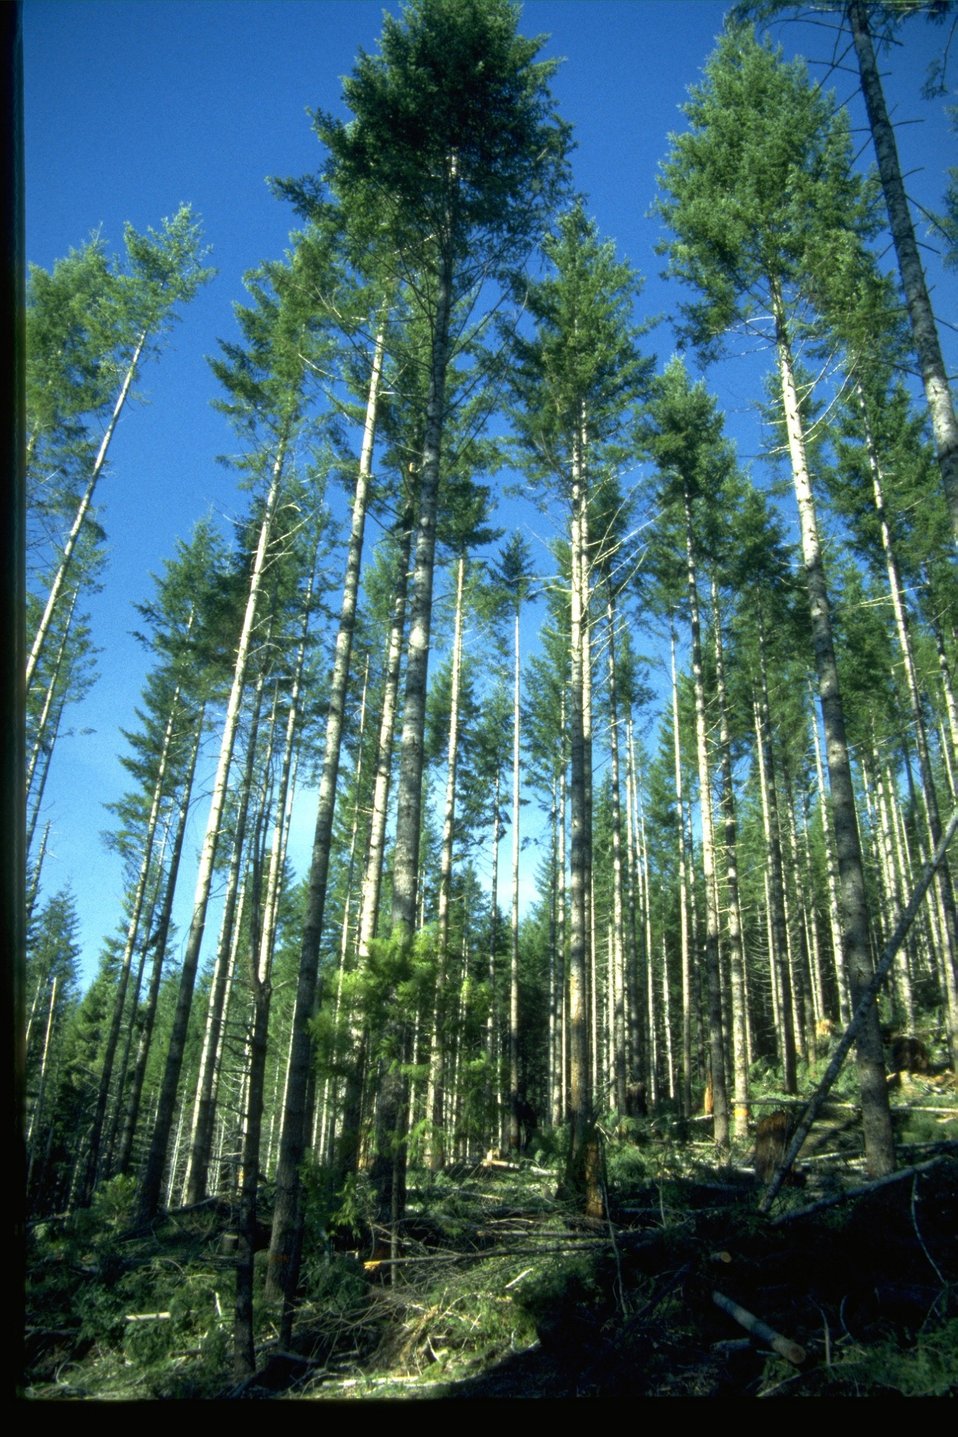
Chopper Rock timber sale.